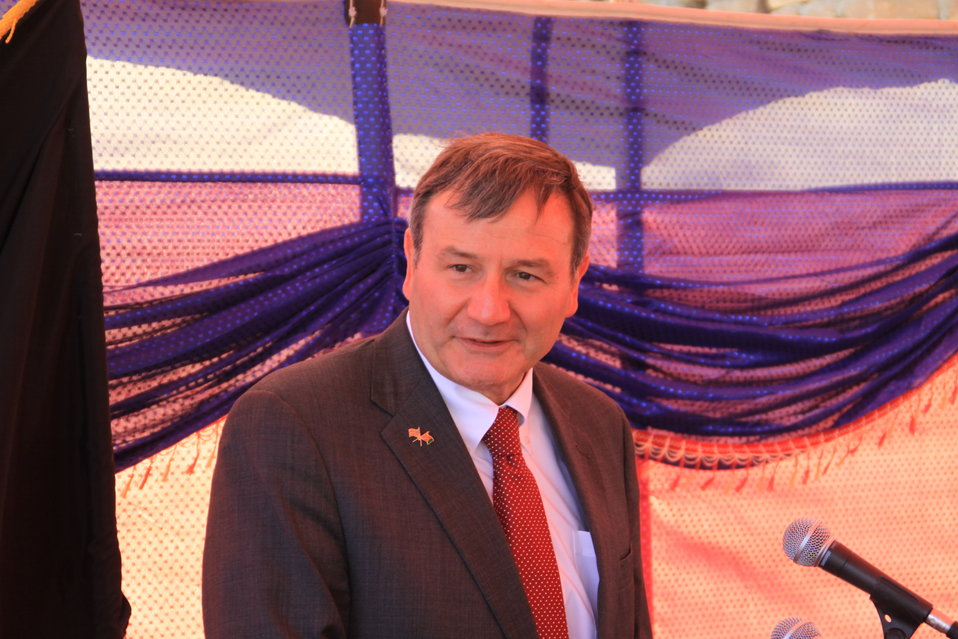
AVIPA Plus Wheat Seed Distribution 101005

US Ambassador Karl Eikenberry and USAID Acting Mission Director Kevin Brownawell joined the Minister of Agriculture, Irrigation and Livestock, H.E. Minister Mohammed Rahimi in signing a Memorandum of Understanding and distributing vouchers to area farmers for wheat and fertilizer.

US Ambassador Karl Eikenberry and USAID Acting Mission Director Kevin Brownawell joined the Minister of Agriculture, Irrigation and Livestock, H.E. Minister Mohammed Rahimi in signing a Memorandum of Understanding and distributing vouchers to area farmers for wheat and fertilizer.